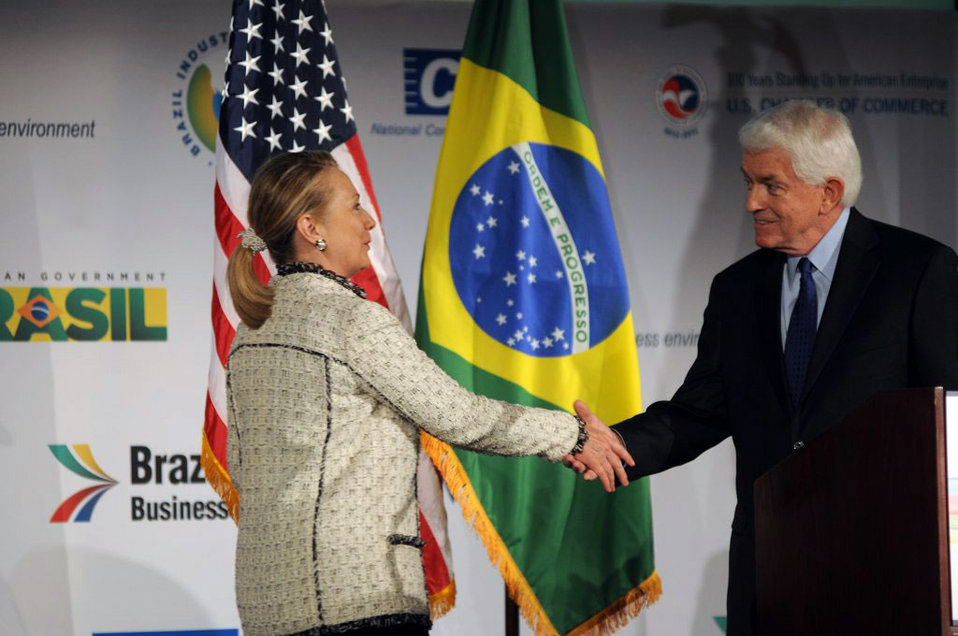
Secretary Clinton Shakes Hands With U.S. Chamber of Commerce President and CEO Donohue

U.S. Secretary of State Hillary Rodham Clinton shakes hands with U.S. Chamber of Commerce President and CEO Thomas J. Donohue at the Brazil-U.S.: Partnership for the 21st Century event, a day-long conference hosted by the Government of Brazil at the U.S. Chamber of Commerce in Washington, D.C., on April 9, 2012.